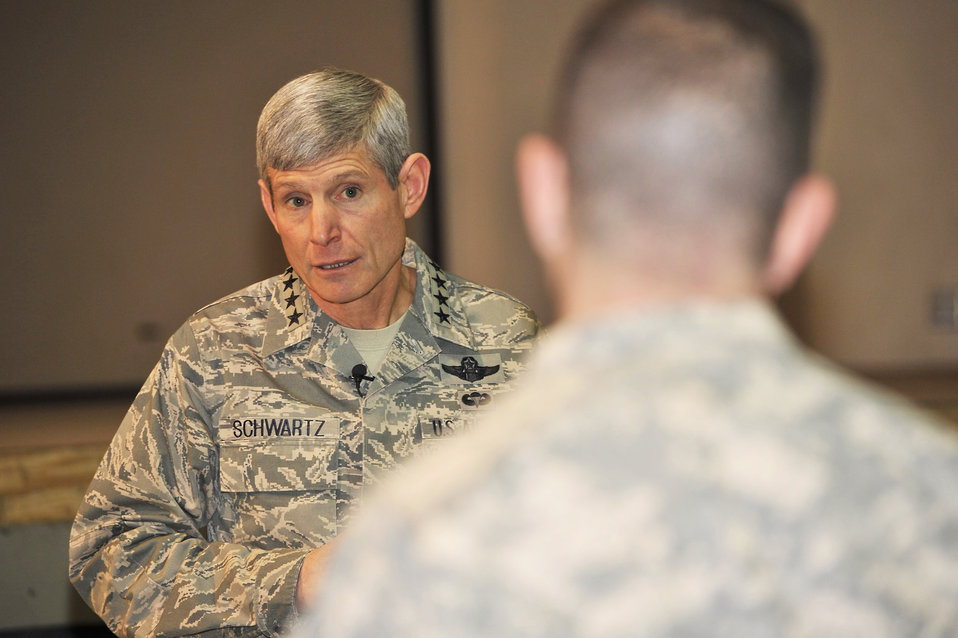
CSAF meets with Airmen during Bagram visit

Air Force Chief of Staff Gen. Norton Schwartz answers a question Jan. 19, 2011, during an “all call” at Bagram Airfield, Afghanistan. General Schwartz talked about his vision for the Air Force and answered questions from Airmen.